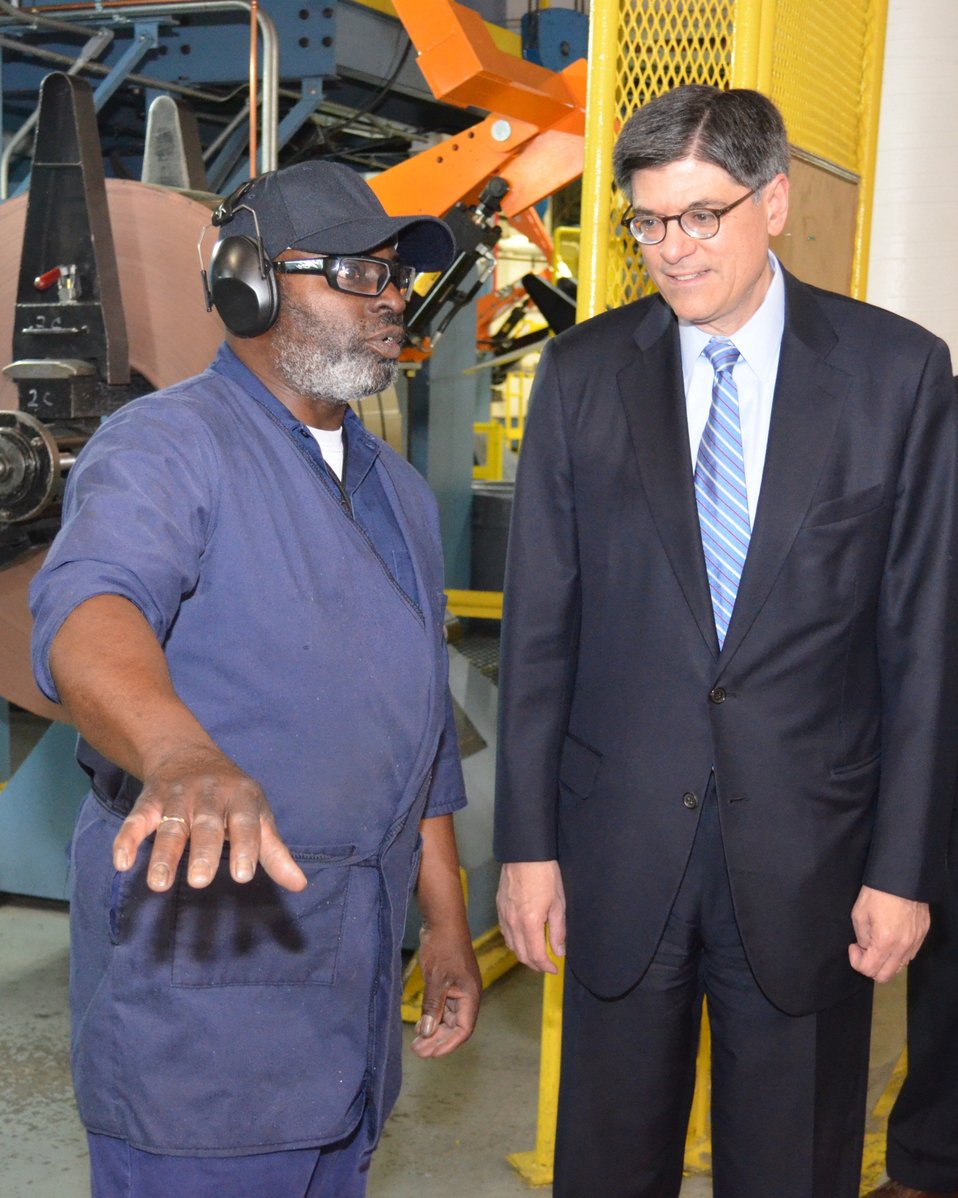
Secretary Lew visits the Denver Mint

July 1, 2013 - Freddie Smith, machine operator, gives Secretary Lew a tour of the Denver Mint facilities